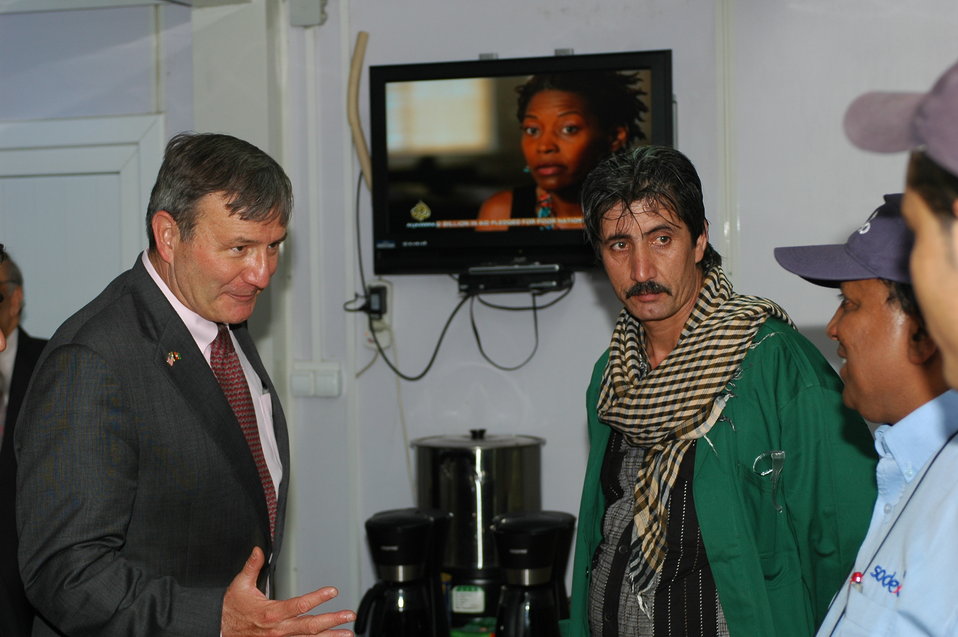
105 MW Tarakhil Power Plant Handover